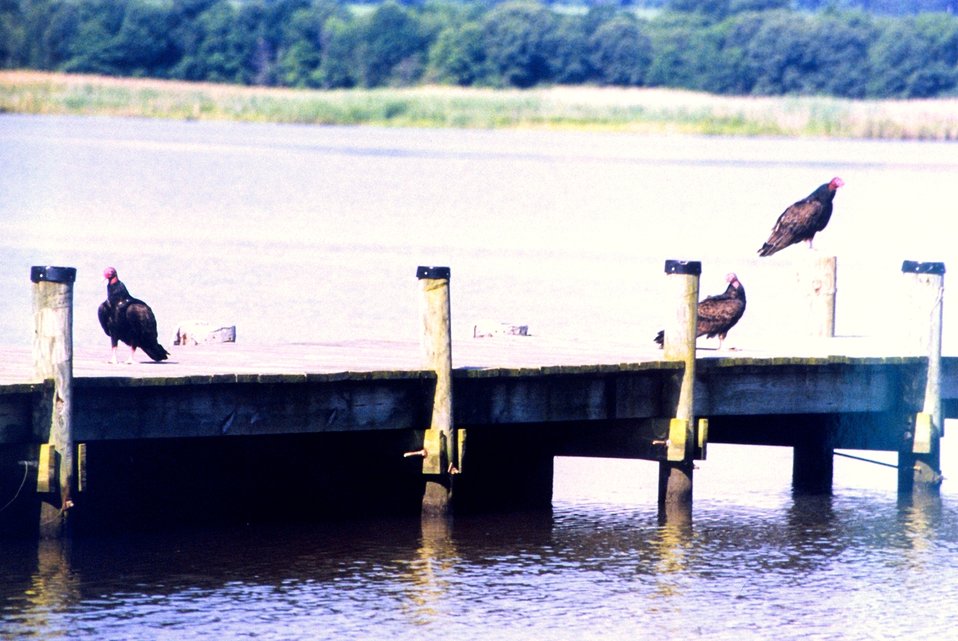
Turkey vultures on a Patuxent River pier.